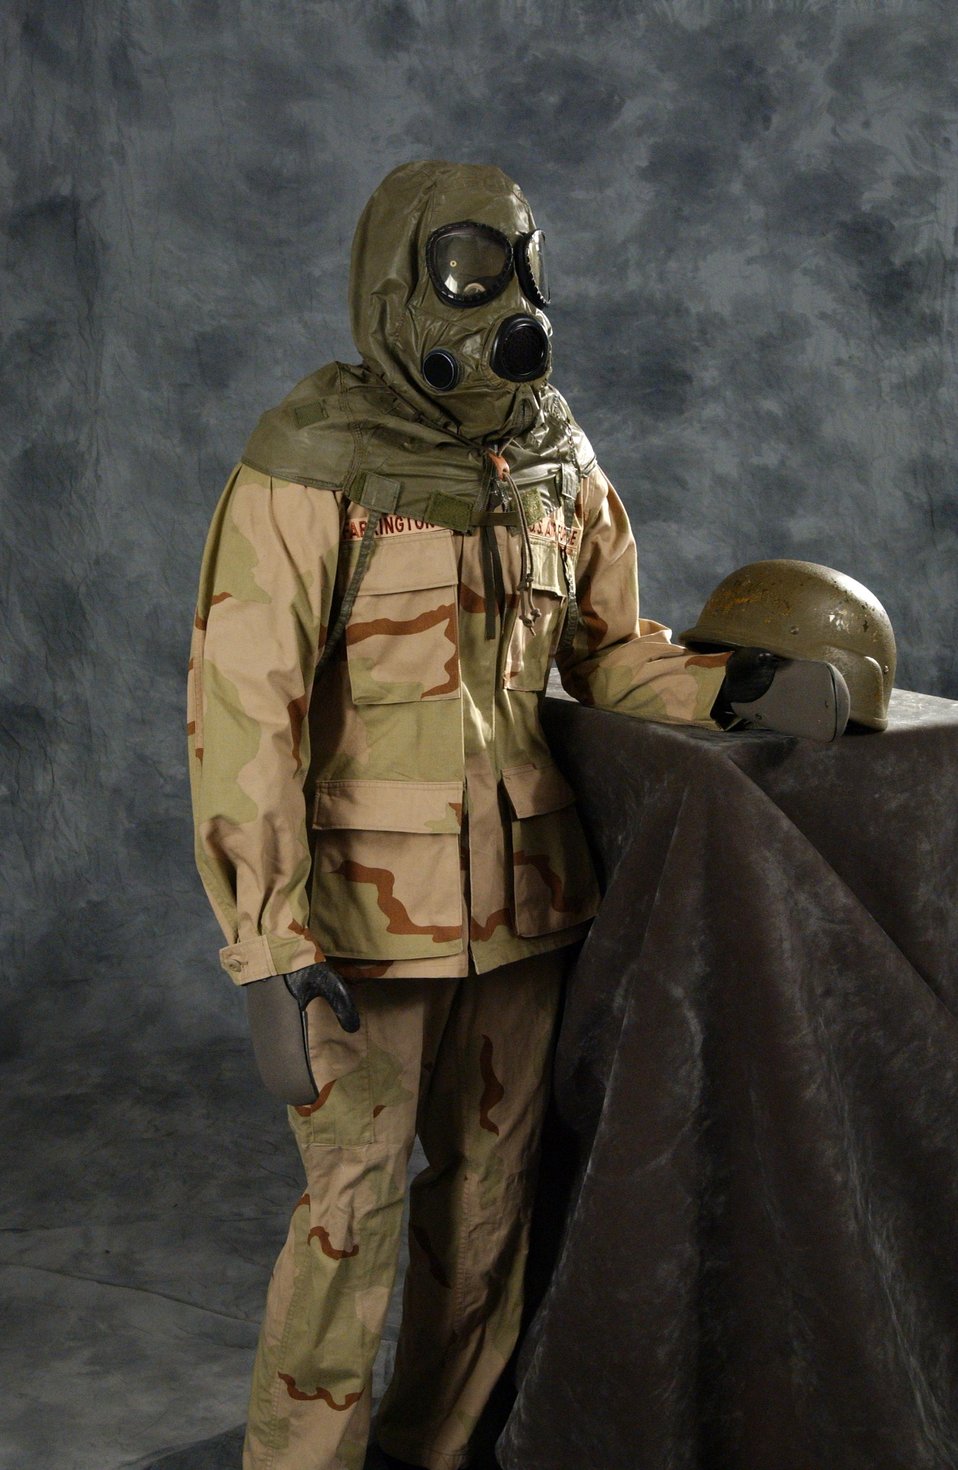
AT NREL, ADAM (ADVANCED AUTOMOTIVE MANIKIN) IS USED TO ASSESS HUMAN THERMAL COMFORT.

ADAM is designed to evaluate human physiological response to transient, non-homogeneous thermal conditions. His sensors measure skin temperature and core temperature changes and he sweats just like a human would in the same conditions. This allows researchers to evaluate advanced climate control systems and physiological responses to wearing protective suits.